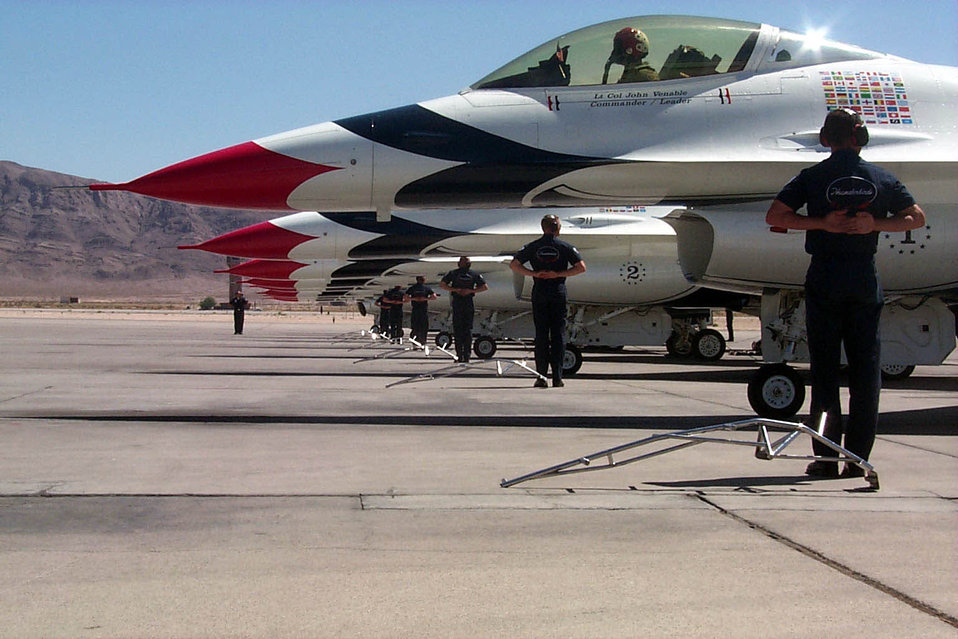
Mission Continues

NELLIS AIR FORCE BASE, Nev. -- The U.S. Air Force Air Demonstration Squadron